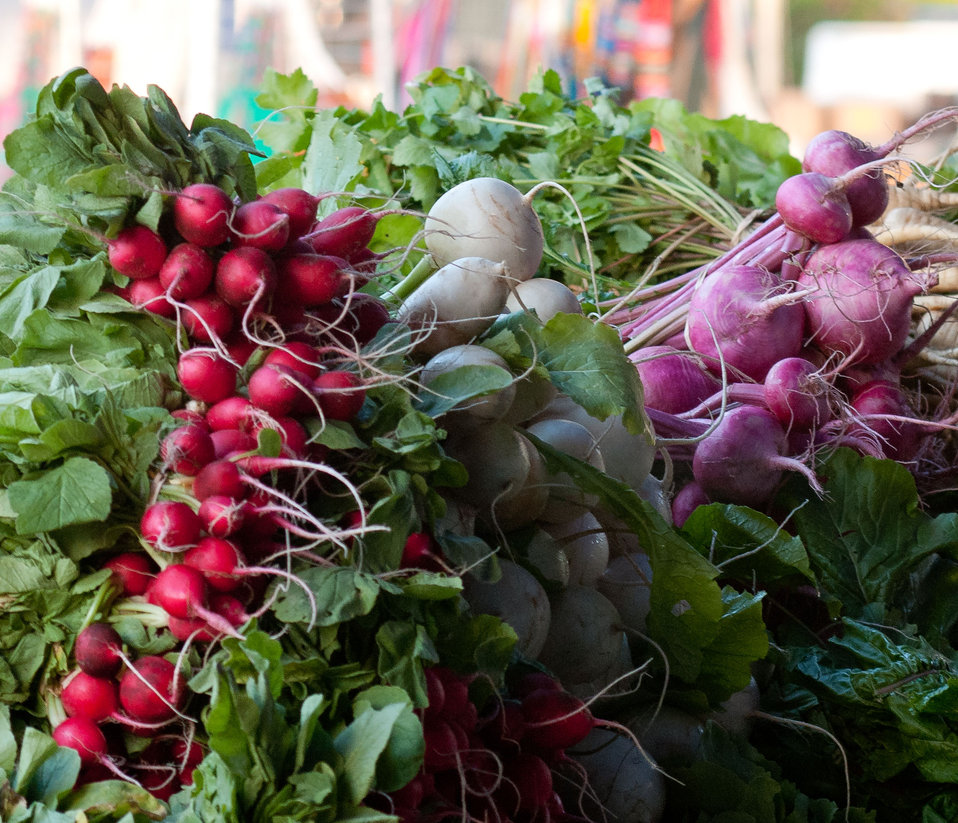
Worden Farm (www.wordenfarm.com) fresh picked organic radishes are ready for sale at the Saturday Morning Market, in St. Petersburg, FL, on April 14, 2012. Worden Farm is a family farm that provides certified organic produce to Southwest Florida through community supported agriculture (CSA) membership programs and retail sale at several farmer’s (community) markets. Chris Worden, Ph.D. and Eva Worden, Ph.D. founded and operates the farm that employs more than 20 people. Growing certified organic crops in the coastal sandy soil has required them to develop innovative farming techniques which help the farm as well as assist the studies of universities and farm industry. There are several Worden Farm apprenticeships that provide hands-on training in all aspects of the farm, to include direct marketing at the Saturday Morning Market, or other market sites. The farm also holds culinary and gardening workshops, and other interactive educational events. One of their organic certifications is from the U.S. Department of Agriculture (USDA) and they have partnered with the USDA Natural Resources Conservation Service (NRCS) for soil conserving windbreaks and long tunnel structures to nurture seedlings and extend the growing season.